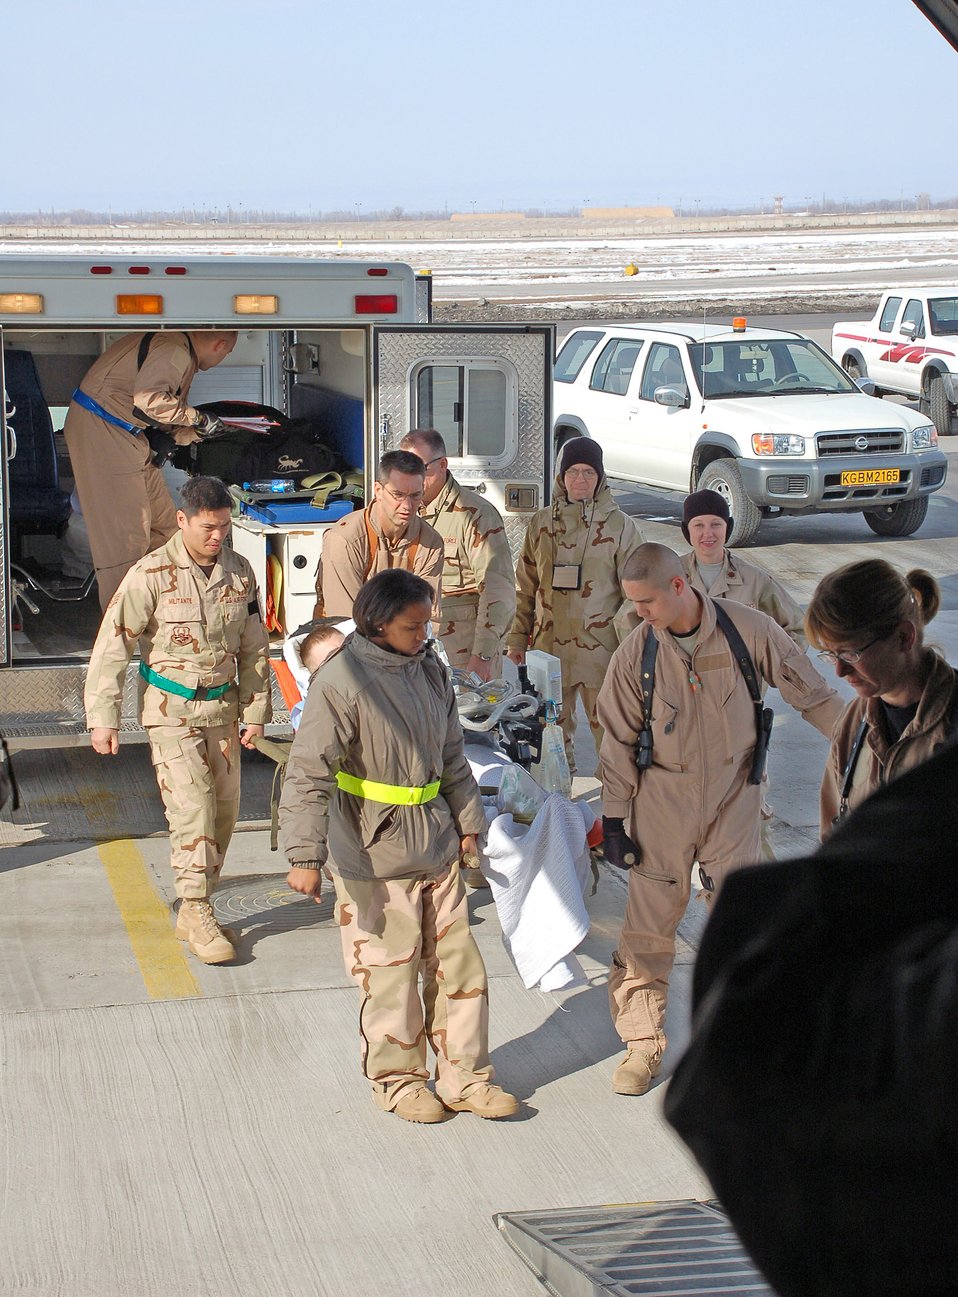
Quick actions save life

A medical team evacuates Airman 1st Class James Garrett Feb. 26 from Manas Air Base, Kyrgyzstan to Germany for treatment after he collapsed. He is deployed from Shaw Air Force Base, S.C.